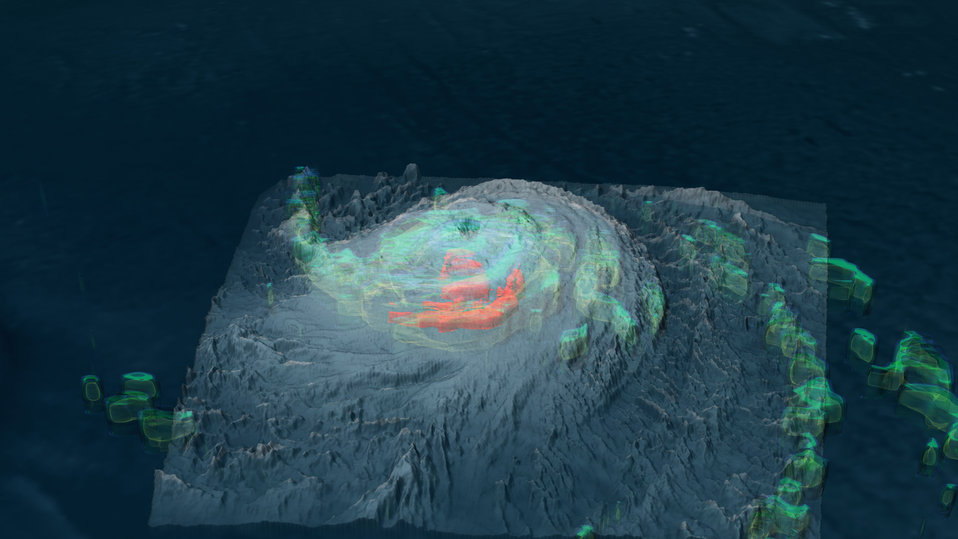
Hurricane Ike on September 4, 2008